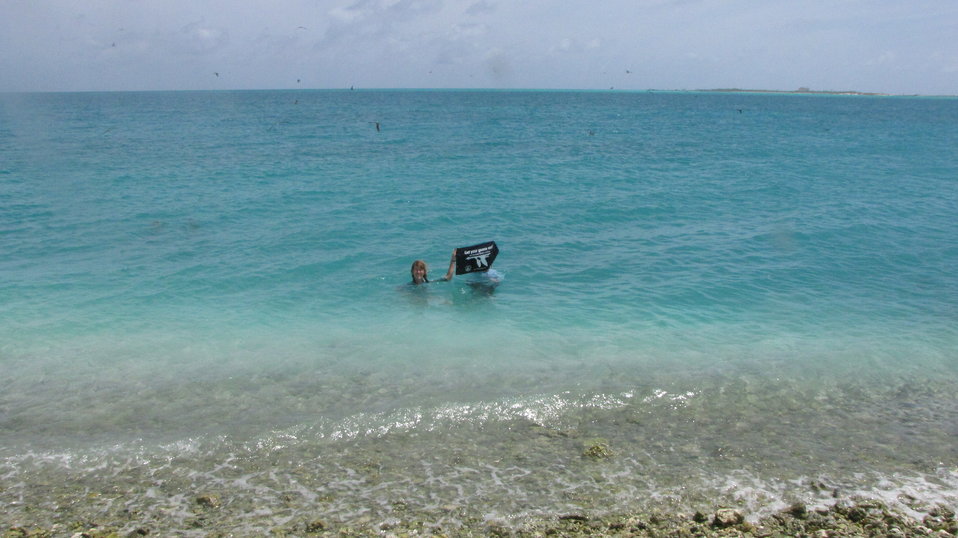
Get Your Goose On! Atoll Style

Kelsie Ernsberger and Lee Ann Woodward swimming off the coast of East Island, Johnston Atoll NWR.